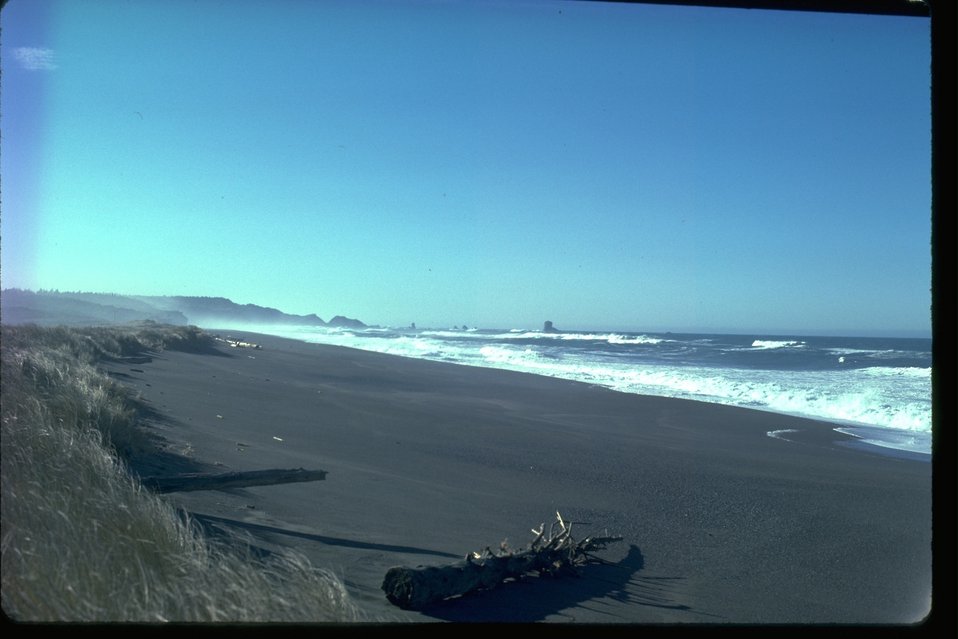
Ocean Beach at New River.